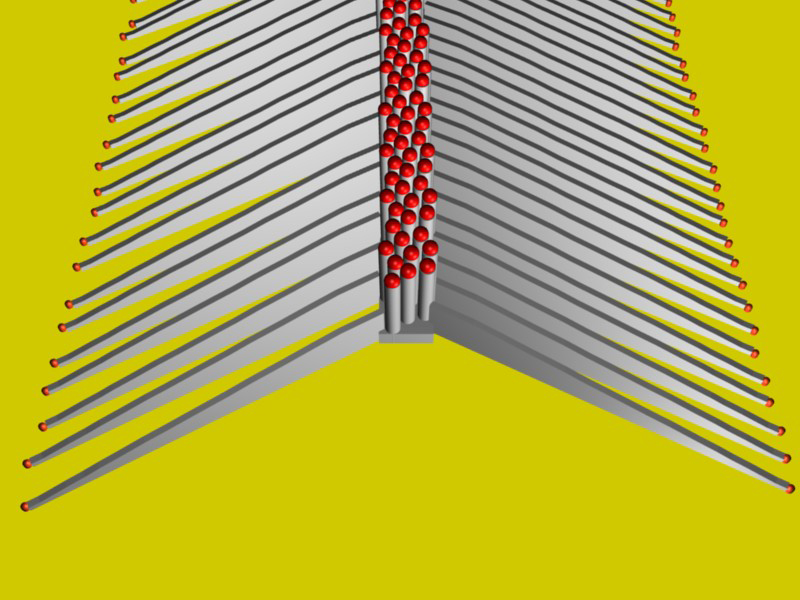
Nanowires

Graphic illustrates a single row of nanowires (cylinders with red tops) with fin-shaped nanowalls extending outward.